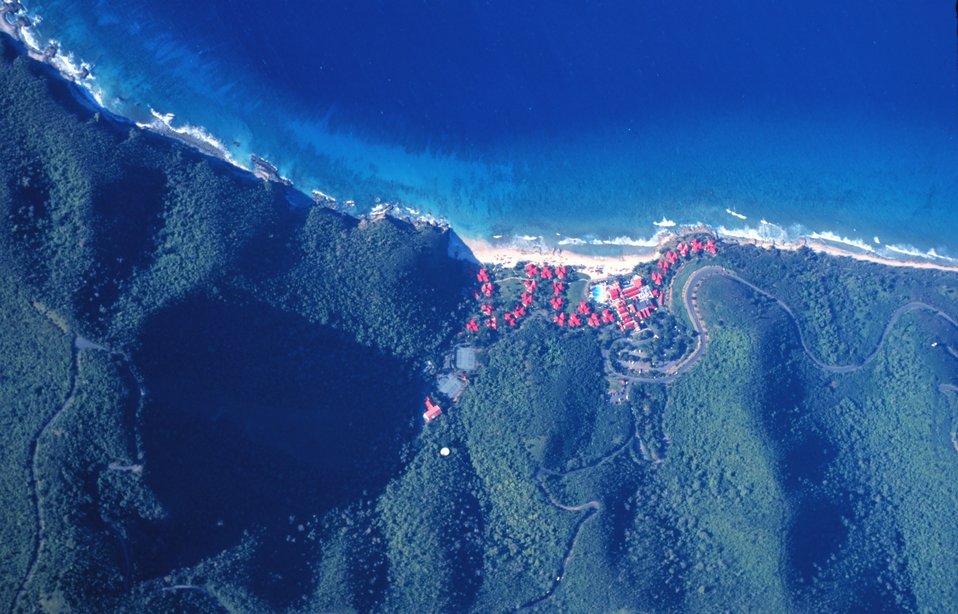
Aerial view of Carambola Beach Resort - west end of St. Croix.